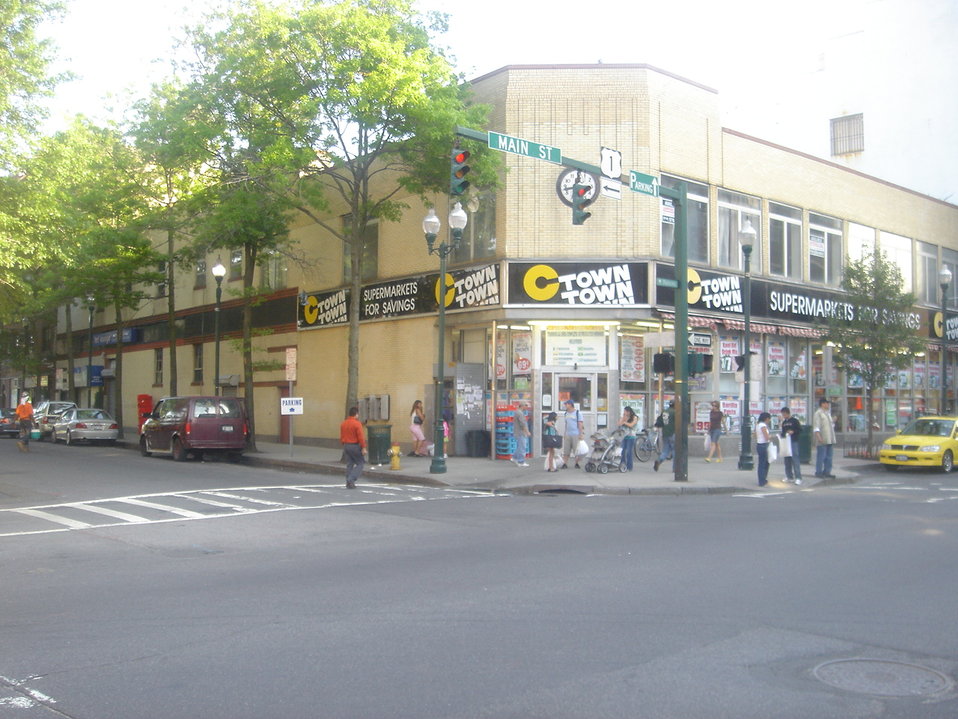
C-Town Supermarket on the southwest corner of Northbound U.S. Route 1 (Main Street) and Division Street in New Rochelle, New York.
Original description; 'I took this photo.'